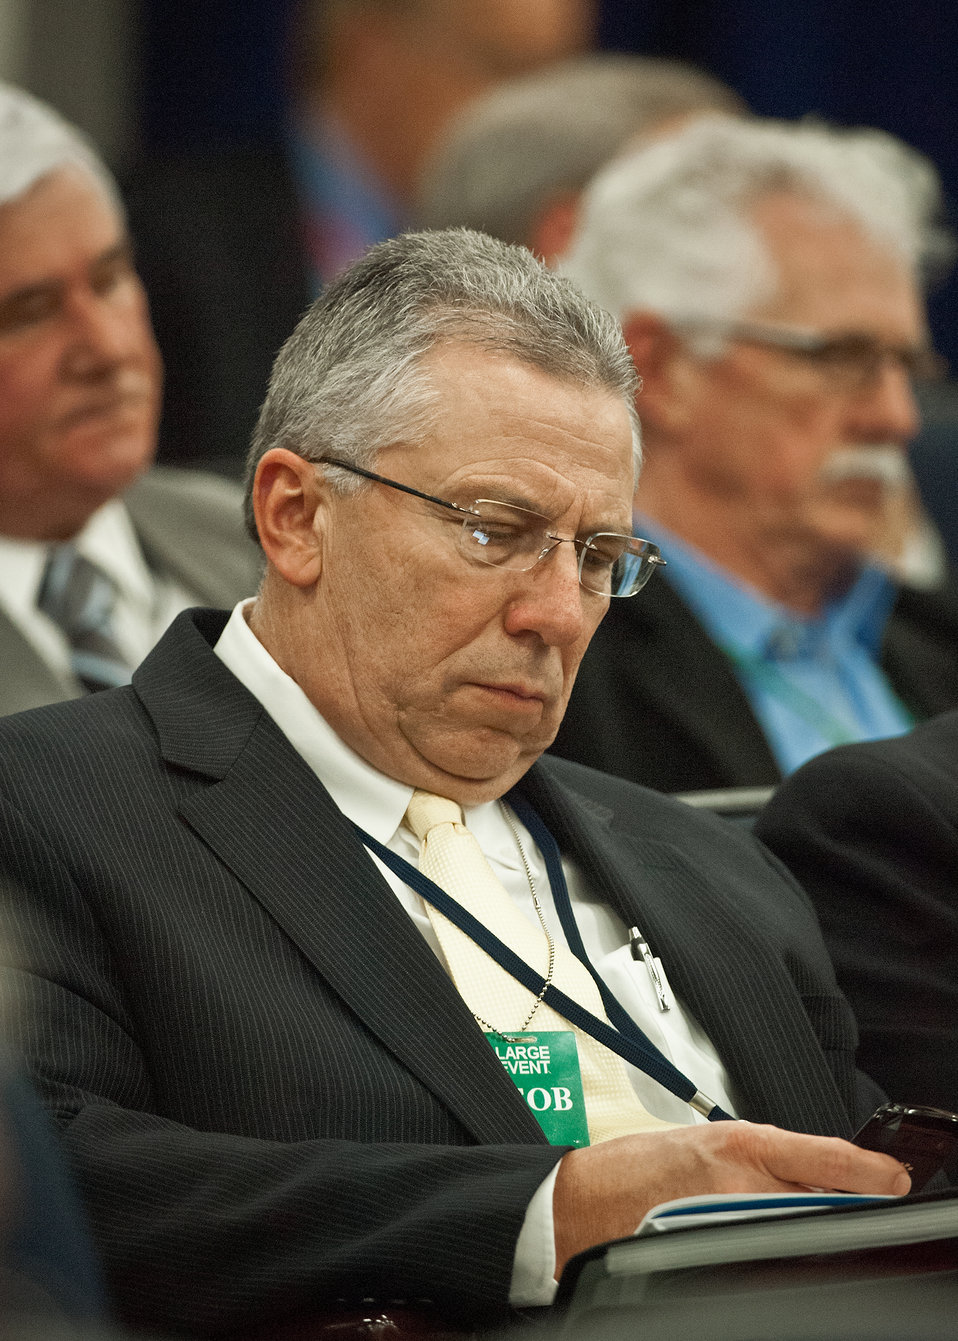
State Representative Jack Draxler, Utah takes notes during the 11th Annual Meeting of State Agriculture and Rural Leaders at the Eisenhower Executive Office Building in Washington, D.C., Friday, January 6, 2012.